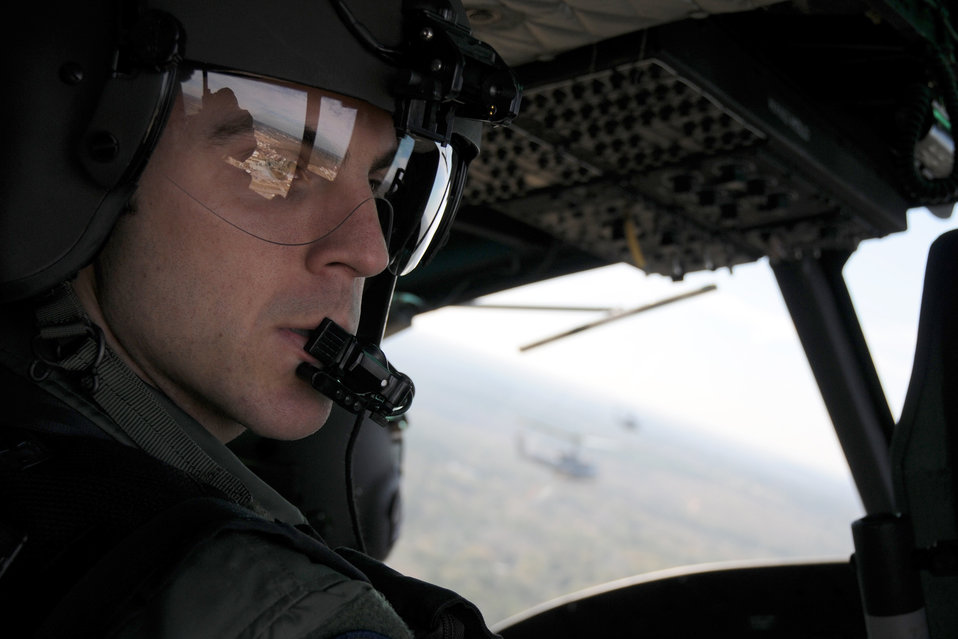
Helicopter training

1st Lt. Michael Scott, a recent graduate from the 23rd Flying Training Squadron at Fort Rucker, Ala., checks his peripherals during a formation-flight mission. The 23rd FTS is the third and final phase of undergraduate pilot training before student helicopter pilots can obtain their wings. It is the Air Force's primary source of helicopter pilot training for special operations, combat search and rescue, missile support and distinguished visitor airlift missions.